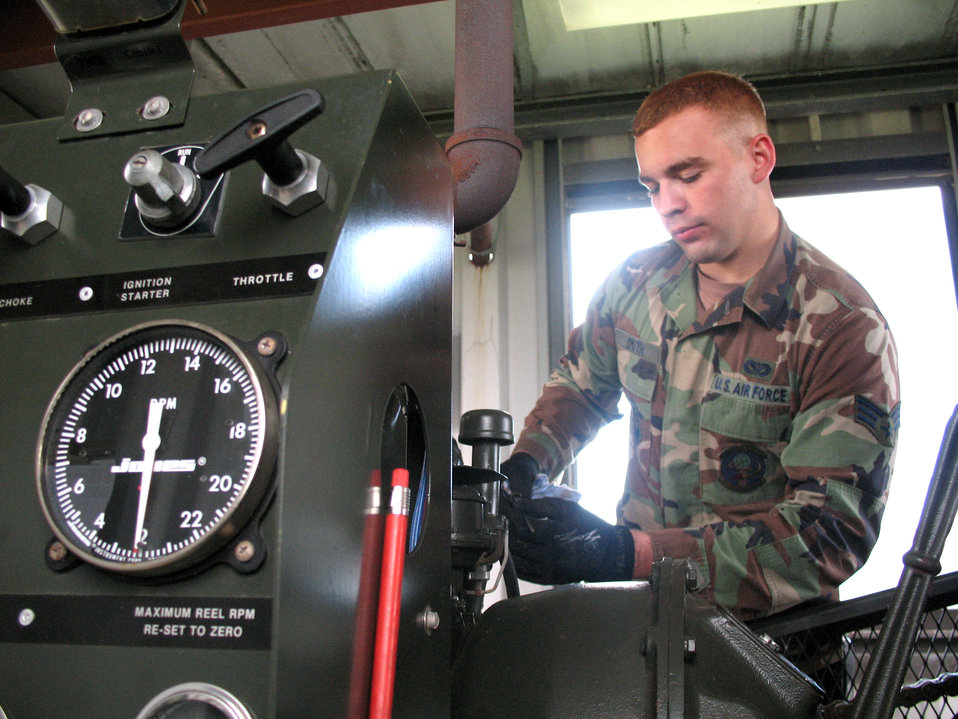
Lajes Airmen can stop a speeding plane

Senior Airman Wade Smith checks the oil in the generator that runs the barrier arresting kit May 18 at Lajes Field, Azores. Civil engineering Airmen from Lajes Field's power production shop stand to stop aircraft with brake and engine failures.